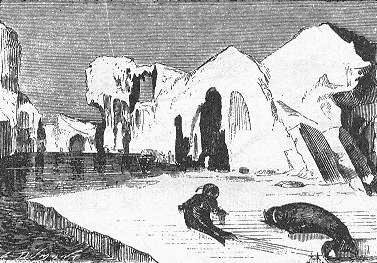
An illustration from Jules Verne's novel 'Journeys and Adventures of Captain Hatteras', part I: 'The English at the Noth Pole' drawn by Édouard Riou and/or Henri de Montaut. Polski: Ilustracja powieści Juliusza Verne'a 'Podróże i przygody kapitana Hatterasa', części I: 'Anglicy na Biegunie Północnym' autorstwa Édouarda Riou i/lub Henri de Montauta. Français : Jules Verne: 'Voyages et aventures du capitaine Hatteras - Les Anglais au Pôle Nord', Édouard Riou et Henri de Montaut.